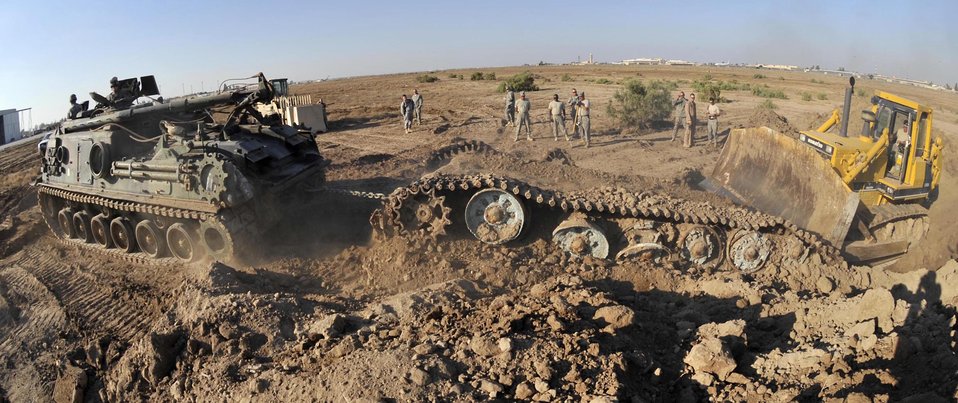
Sather Airmen clear away the debris of war, improve airport safety

Airmen from the 447th Expeditionary Civil Engineer Squadron and Soldiers from the 503rd Maintenance Company work together with an M-88 tank recovery vehicle and a bulldozer pull and push an Iraqi T-72 Main Battle Tank from its grave on the airfield at Sather Air Base, Iraq. The tank was an obstruction to safe airfield operations and had to be removed.